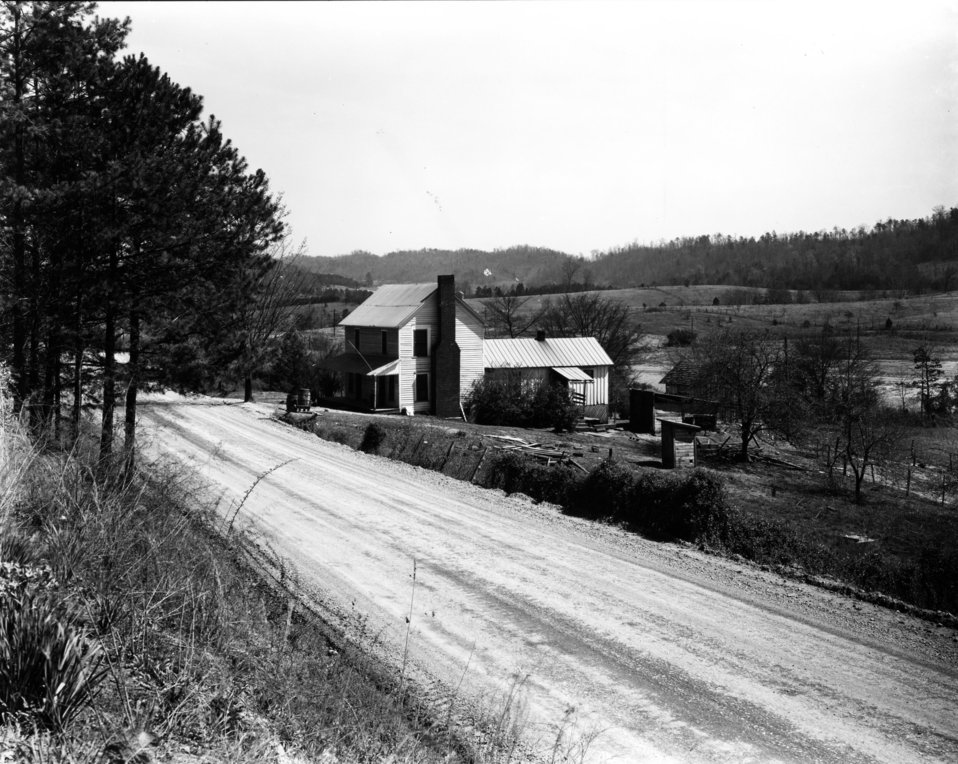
Early settlers at Oak Ridge